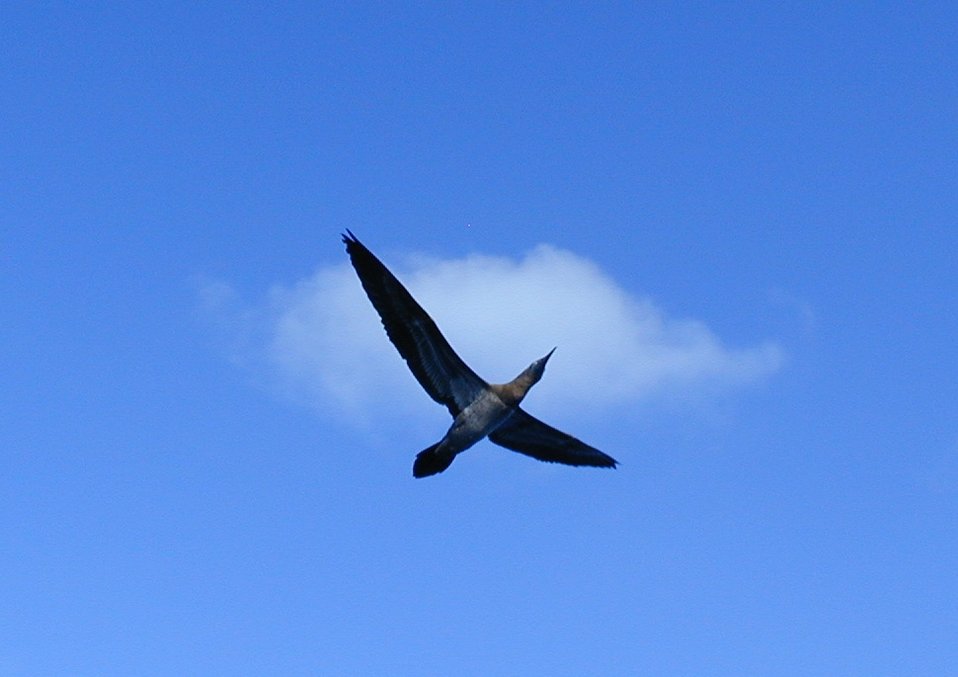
Boobie in flight.